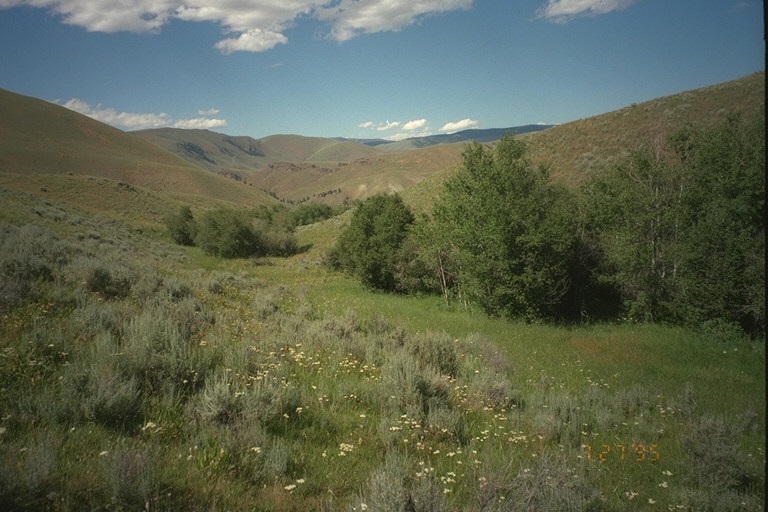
Riparian area Public Lands Salmon Field Office UCSC Upper Columbia Salmon Clearwater District